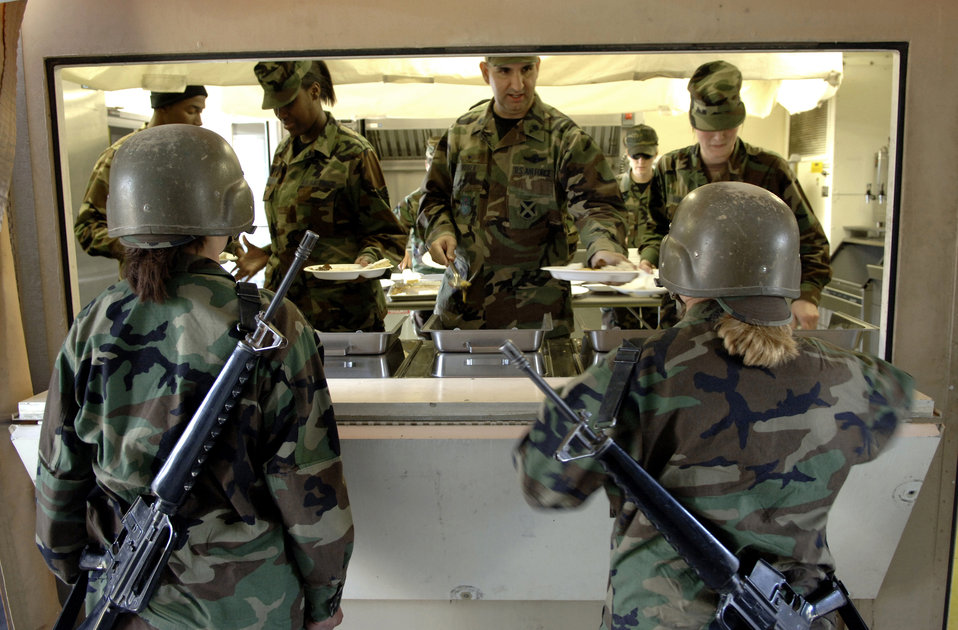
Hot meal

MEDINA ANNEX, Texas -- Lt. Col. Rob Huber hands a plate of food made by students attending the services apprentice course to a basic trainee Jan. 25. This is the only hot meal they receive during warrior week in basic training. Colonel Huber is the commander of the 344th Training Squadron at Lackland Air Force Base.